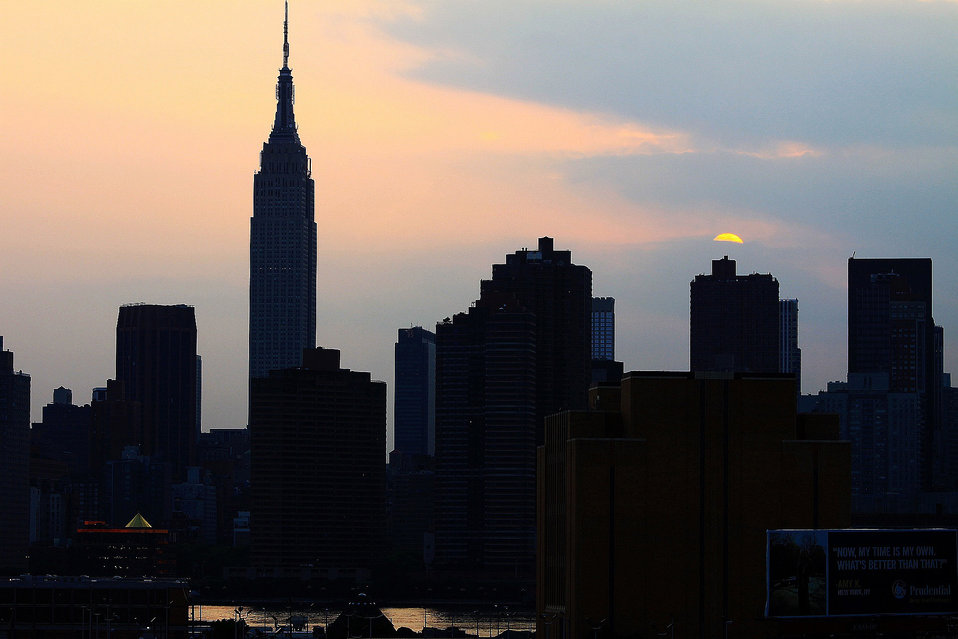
Midtown skyline

Late afternoon city silhouette.